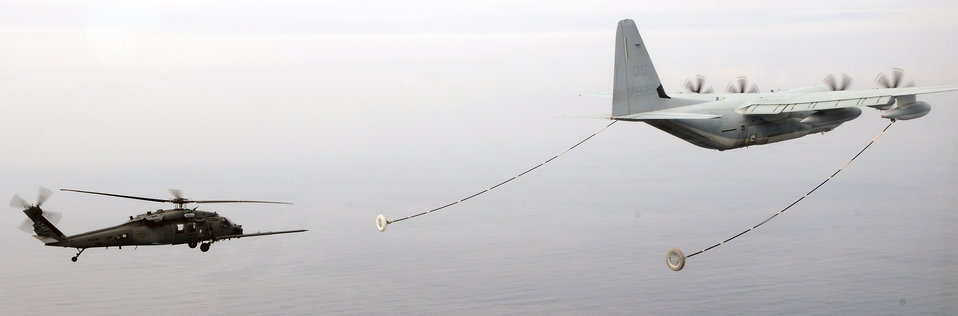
Helicopter pilots train Japanese forces on air refueling

An HH-60G-Pave Hawk from the 33rd Rescue Squadron receives fuel from an MC-130 during a three-day intensive air refueling course March 24 at Kadena Air Base, Japan. Pilots from the 33rd RQS put together a refueling training program for Japanese Self Defense Force helicopter pilots to provide them the tools to begin conducting long-range rescue missions.